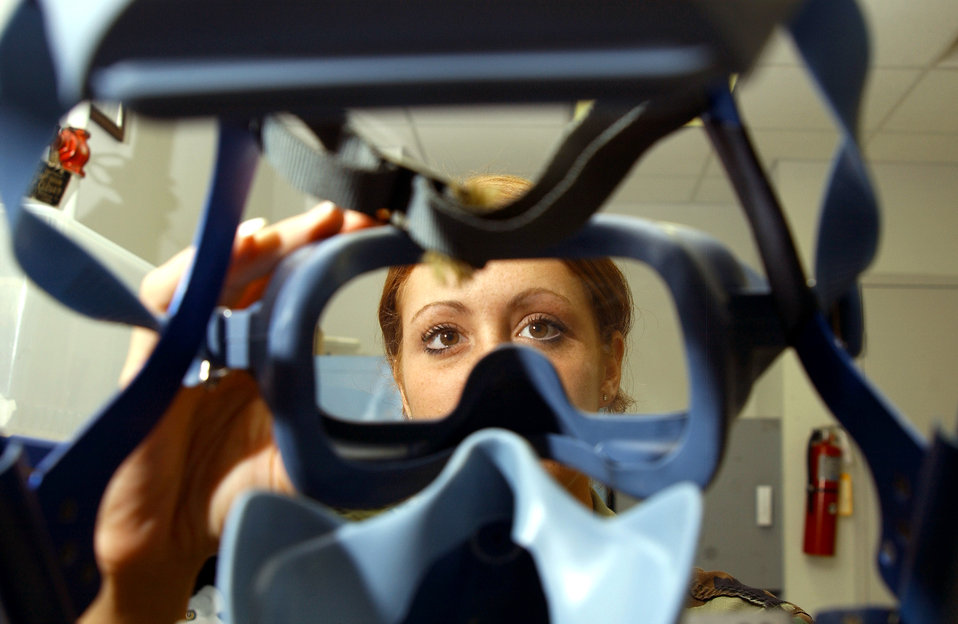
First step

MACDILL AIR FORCE BASE, Fla. (AFPN) -- Senior Airman Corinna Carver inspects a quick-don mask. Aircrew’s use the masks if smoke enters an aircraft’s cockpit. Airman Carver is an aircrew life-support technician with the 91st Air Refueling Squadron.